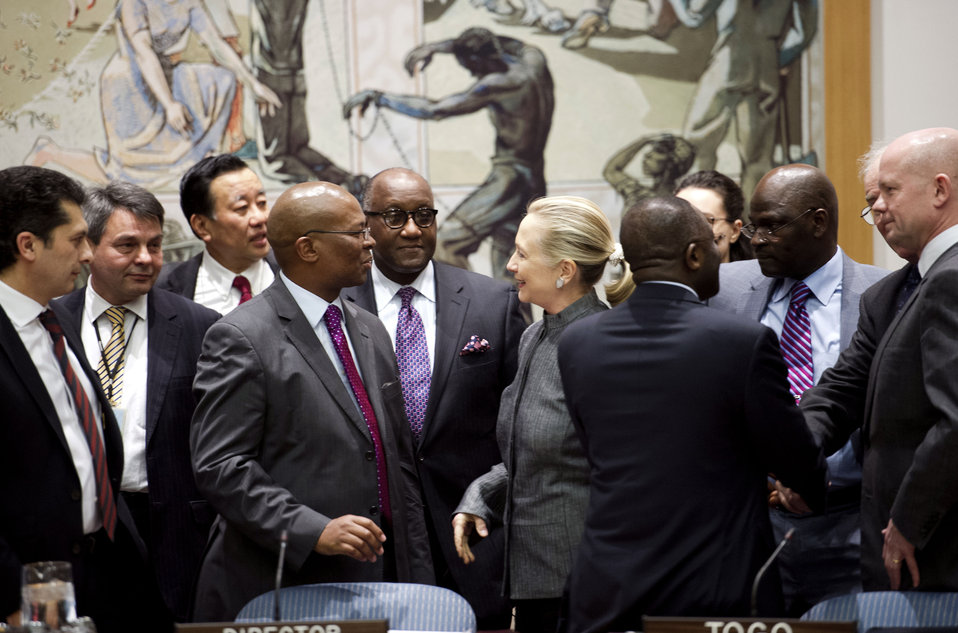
Secretary Clinton Speaks With Dignitaries at a UN Security Council Session on Syria

U.S. Secretary of State Hillary Rodham Clinton speaks with dignitaries at a United Nations Security Council Session on the situation in Syria at the United Nations in New York City, New York on January 31, 2012.